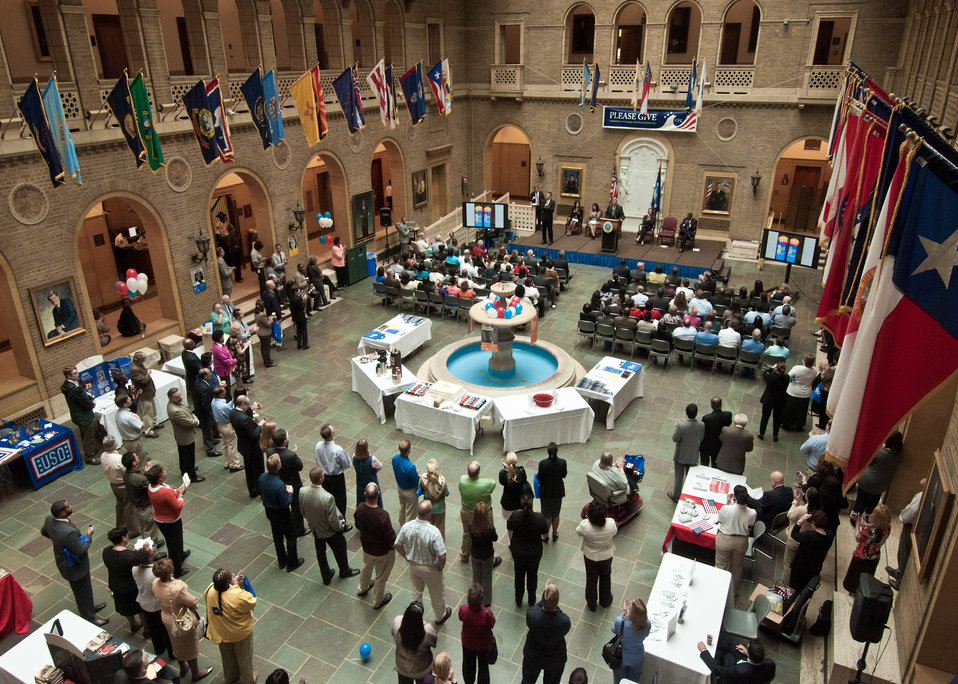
Agriculture Secretary Tom Vilsack welcomes U.S. Department of Agriculture employees to the kick-off of the USDA 2011 Combined Federal Campaign “Compassion of Individuals, Power of Community” at the USDA in Washington, DC, Wednesday, September 21, 2011. The theme of the 2011 campaign is “Celebrating 50 Years of Caring, Serving and Giving.” Behind Secretary Vilsack is a memorial to the U.S. Department of Agriculture World War One employees who lost their lives during the “Great War.” The Federal Combined Campaign exhibits represented organizations serving military personnel and their families.